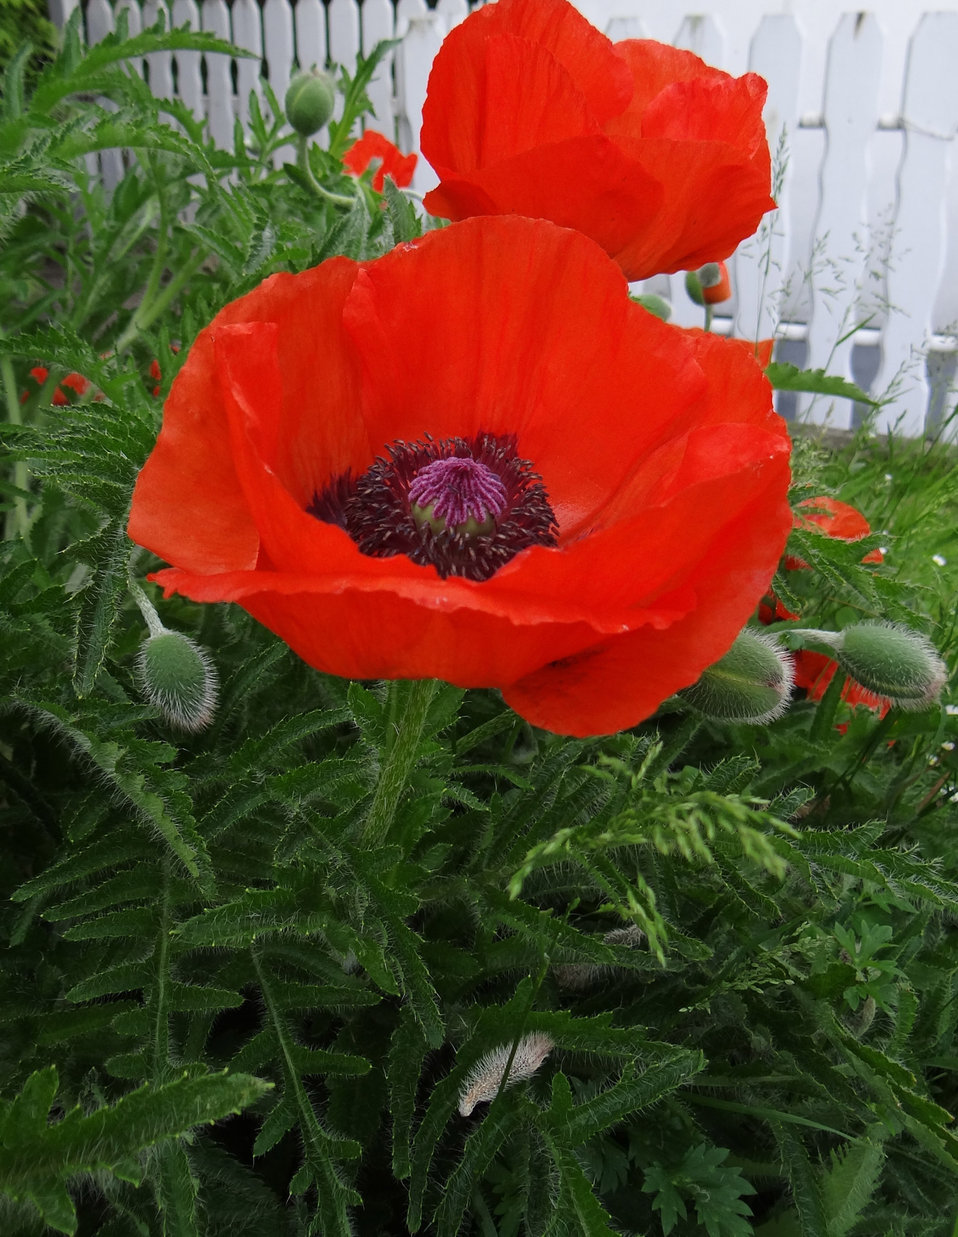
Red poppy

The superb red flowering poppy.